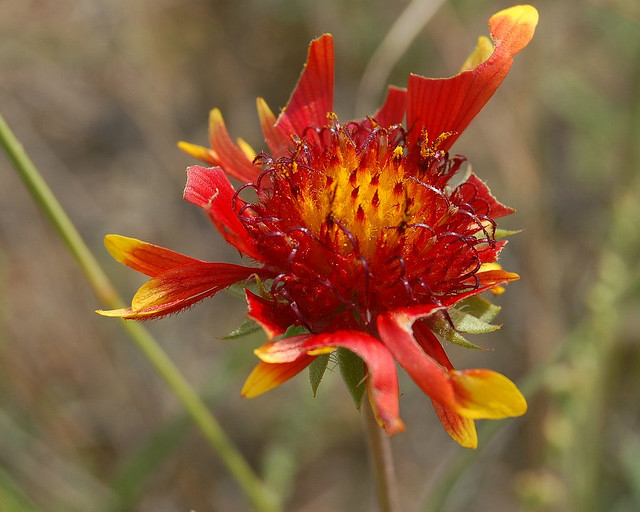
blanket flower

Rocky Mountain Arsenal National Wildlife Refuge, CO